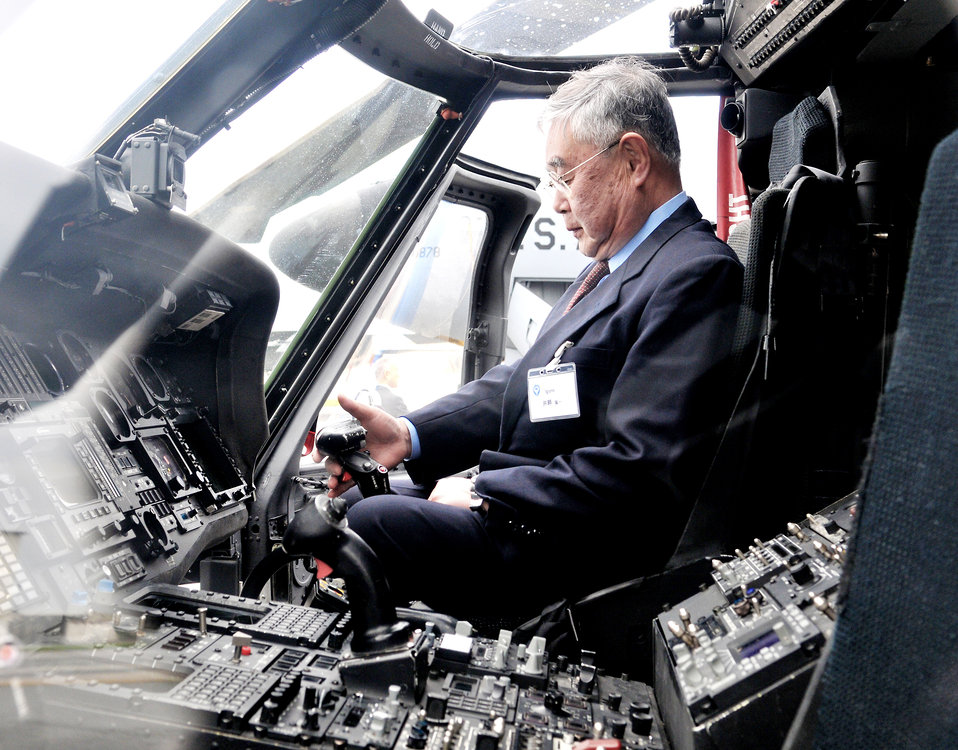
Japanese civic leaders get a taste of Kadena mission

Maj. Steven Marshall briefs Japanese civic leaders about the 909th ARS mission Feb. 19, 2010 at Kadena Air Base. Major Marshall is a pilot assigned to the 909th Air Refueling Squadron.